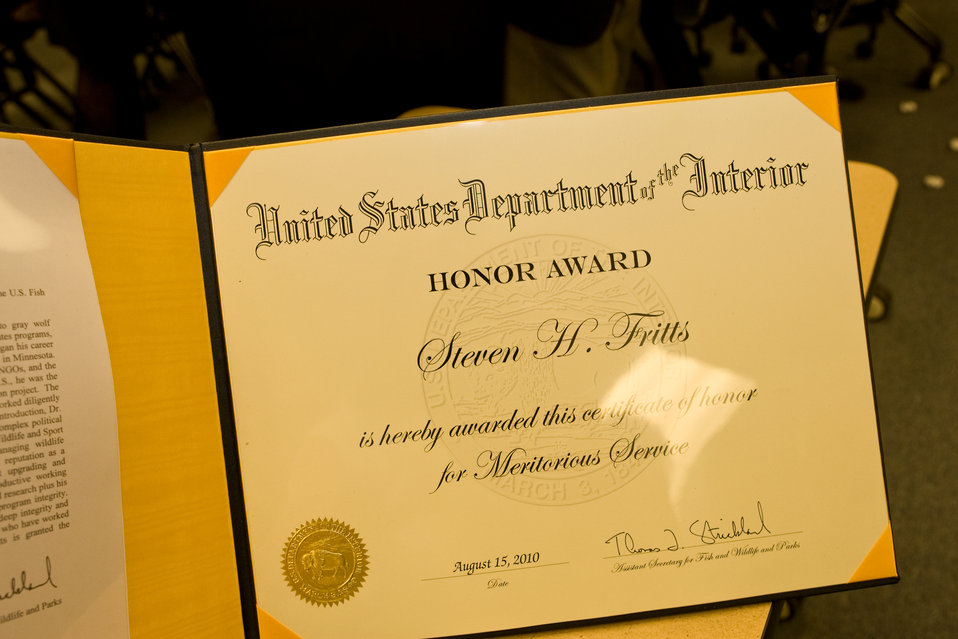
Steve Fritts' Honor Award

On May 23rd, 2011 The U.S. Fish and Wildlife Service Mountain-Prairie Region honored three of the most influential individuals in wolf recovery in the Northern Rocky Mountains: Ed Bangs, Steve Fritts, and Margot Zallen. Ed Bangs started the event with an hour-long presentation, “Wolf Conservation: The Good, The Bad, and The Ugly.”

Following the presentation, Regional and National leadership recognized the imminent retirement of Ed, Steve, and Margot with a variety awards for their contributions.